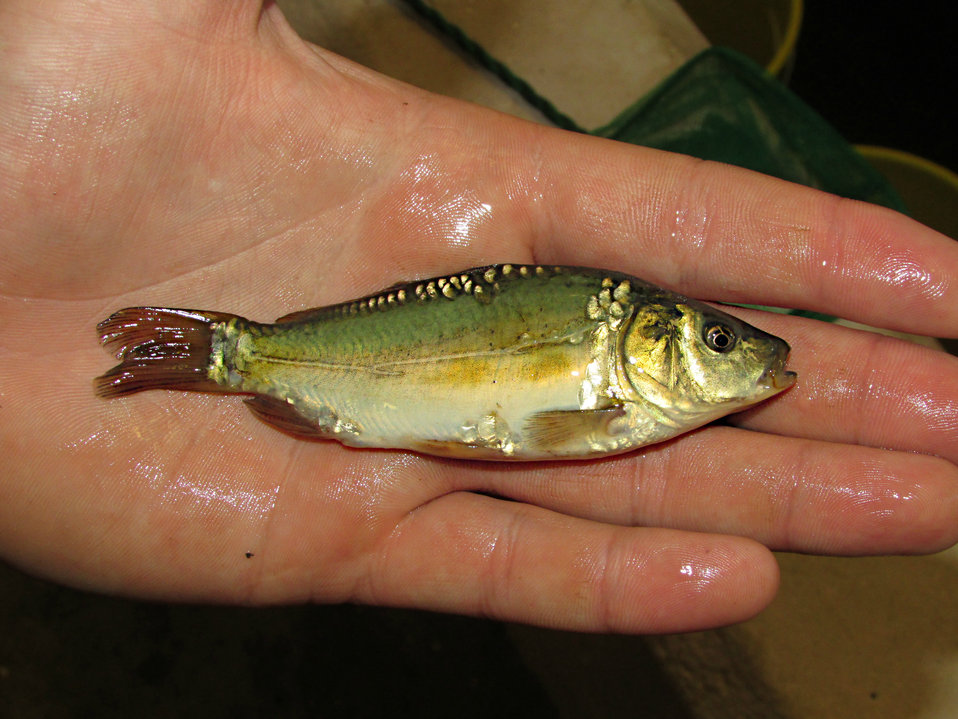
Mirror Carp

Although considered an invasive species, these fish are very rare in South Dakota. Mirror carp come from a genetic mutation in common carp, giving them their unique scale patterns. It's believed they were bred by monks in the 1300s because of their lack of scales, making them easier to clean for cooking.

This mirror carp was captured today at the hatchery and now can be seen in the aquarium!